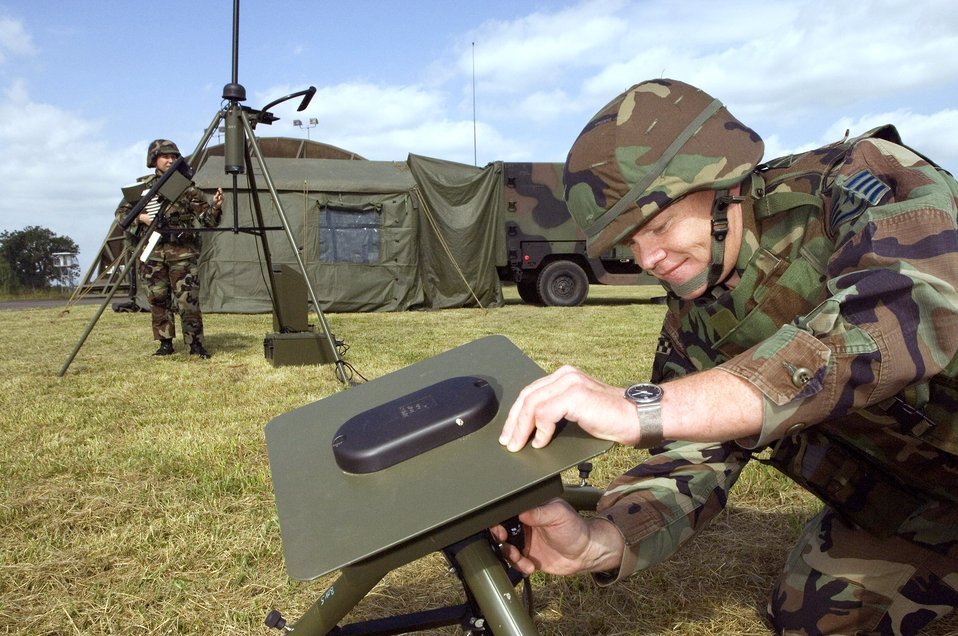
Air Force provides Army's weather support

Staff Sgt. Craig Gaillardet attaches the lightning detector to the weather station at Wiesbaden Army Airfield, Germany, June 21. Sergeant Gaillardet, a Pecos, Texas, native, is a combat weather forecaster with the 7th Weather Squadron headquartered in Heidelberg, Germany.